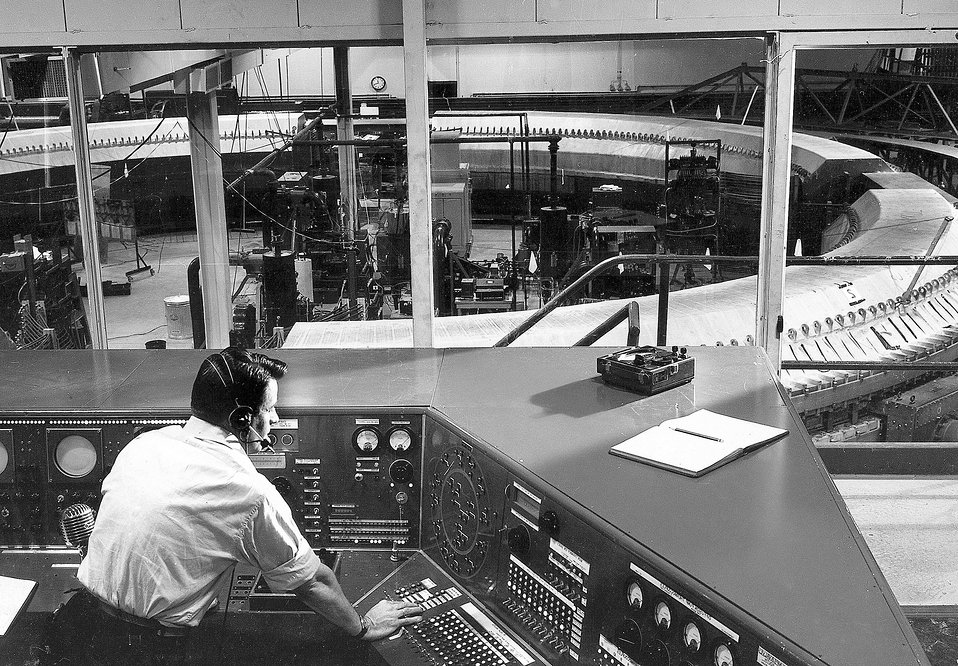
General view of the Cosmotron from the main control console. Equipment in the center of the ring is mainly vacuum gear. (Personnel - E. Maher). c. 1952